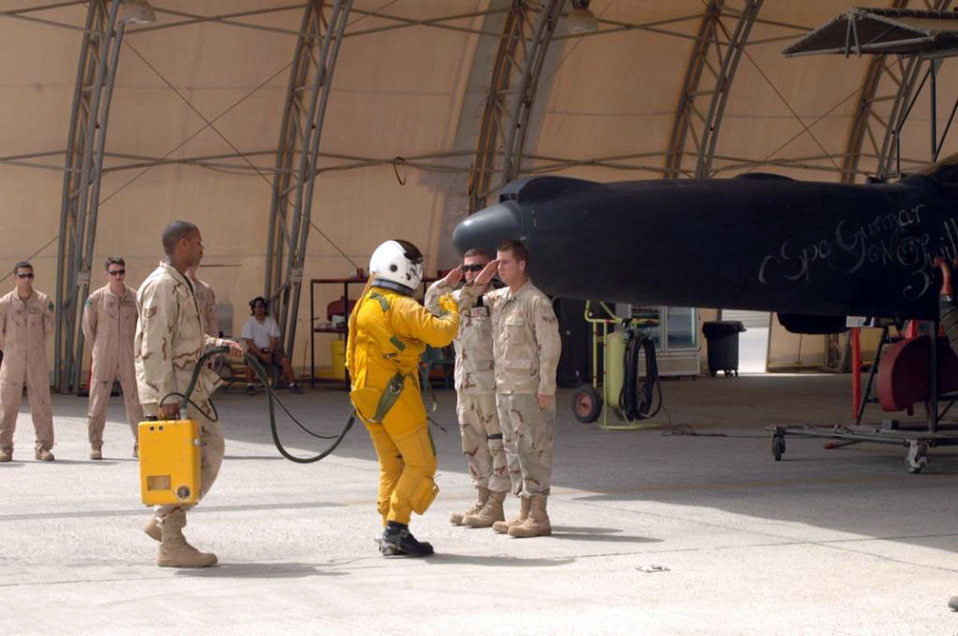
U-2 nose art honors fallen Soldier

A1C Alexander Zwilling and a co-worker salute a pilot before he flies a U-2 featuring chalk art honoring the Airman's brother, a Soldier who was killed July 13, 2008, in Afghanistan.